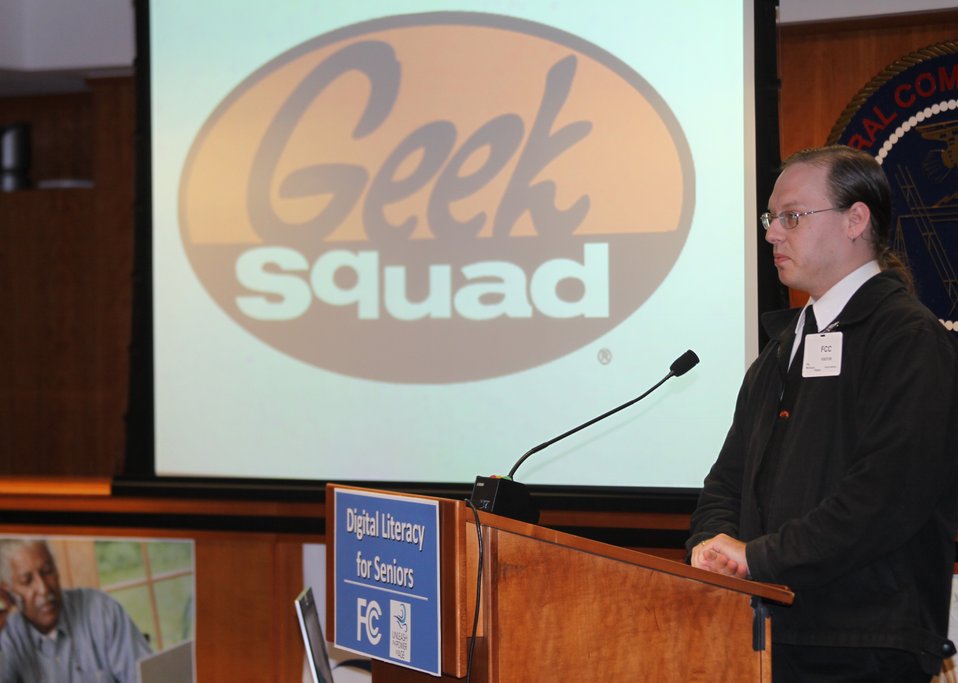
Ray McGough, Best Buy’s Geek Squad: Digital Literacy for Seniors: How the Internet Can Benefit Older Americans, April 24, 2013